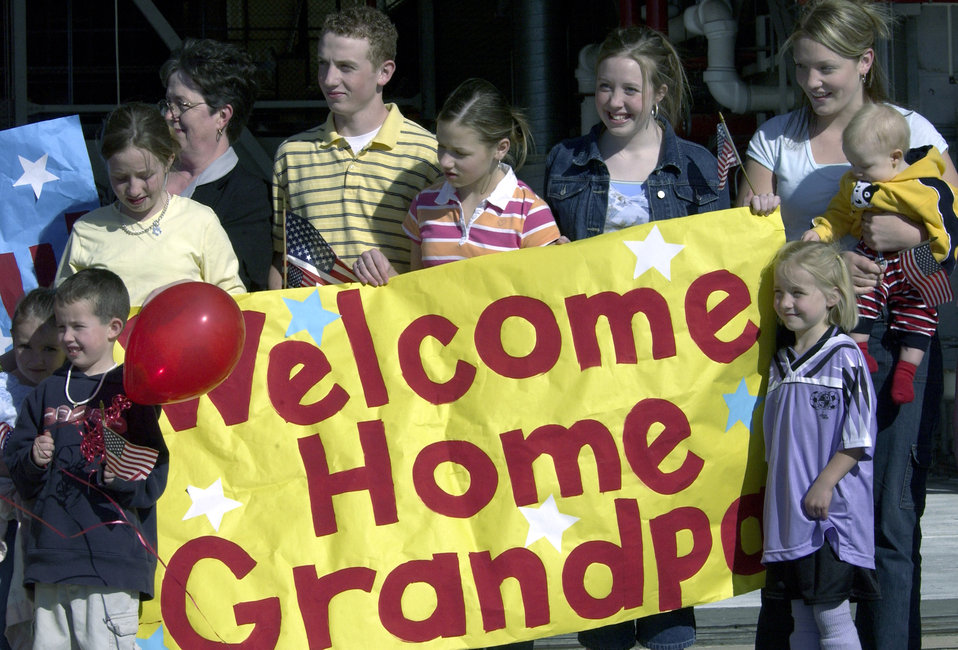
The sign says it all

SALT LAKE CITY -- Family and friends cheer as members of the 151st Air Refueling Wing, Utah Air National Guard, return home here following a deployment to refuel aircraft as part of the Operation Iraqi Freedom air bridge.